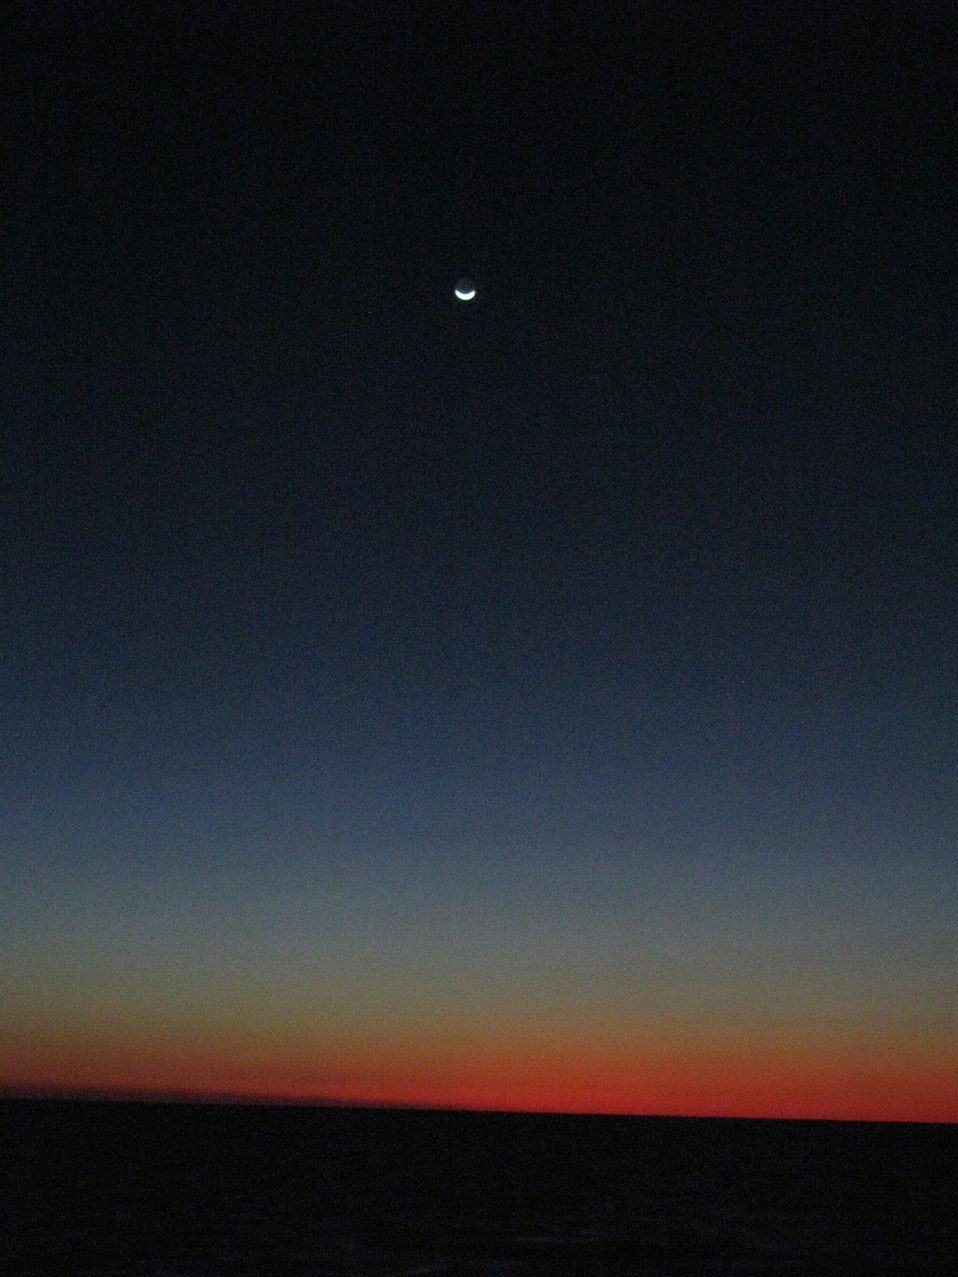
Sunset over the Gulf of Mexico